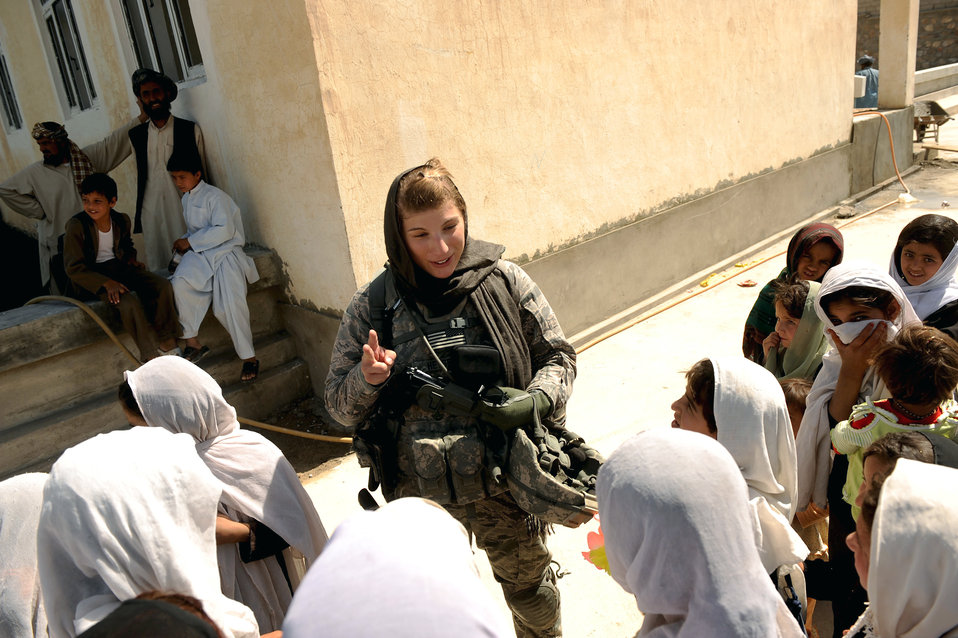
PRT beautifies Afghan girls school

1st Lt. Rebecca Heyse sings the